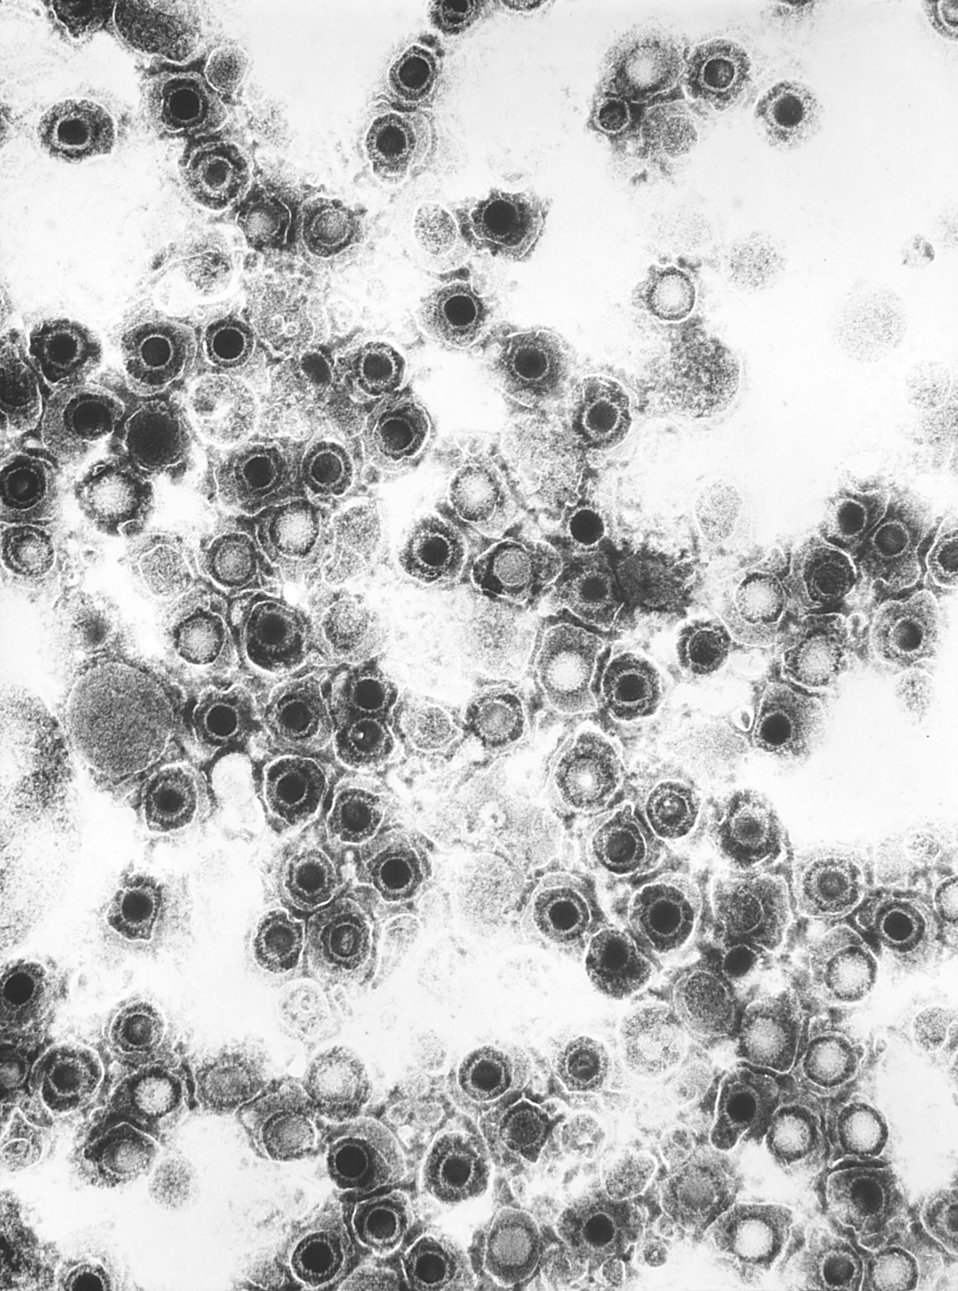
This negatively-stained transmission electron micrograph (TEM) revealed the presence of numerous herpes simplex virions, members of the Herpesviridae virus family. There are two strains of the herpes simplex virus, HSV-1, which is responsible for cold sores, and HSV-2, which is responsible for genital herpes. At the core of its icosahedral proteinaceous capsid, the HSV contains a double-stranded DNA linear genome.